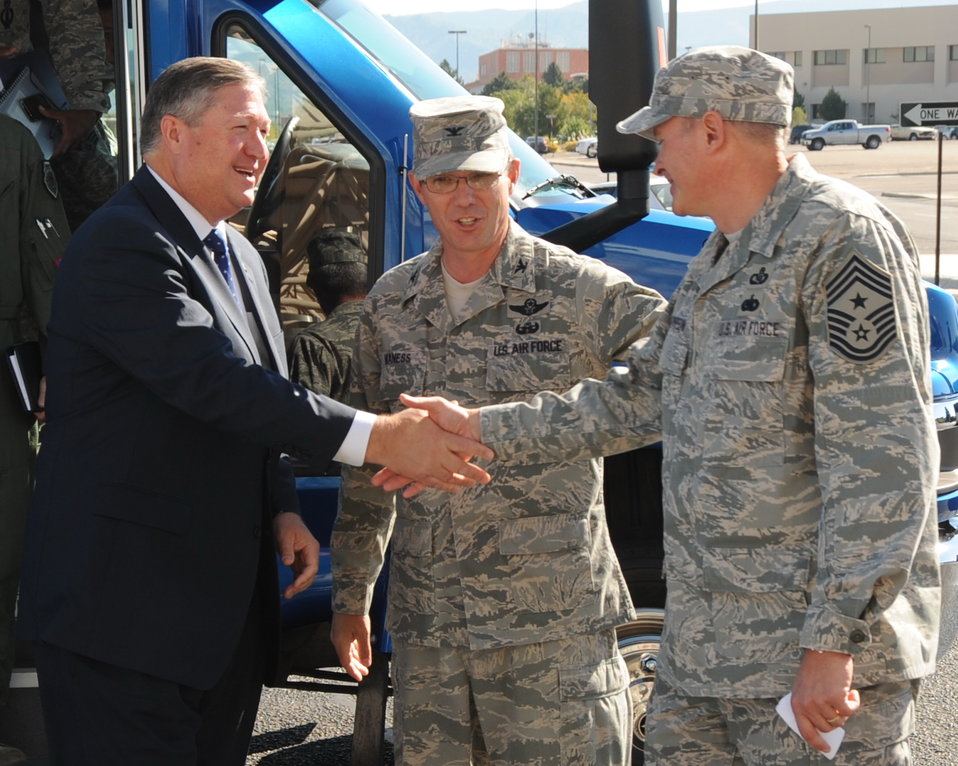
SECAF visits Kirtland Air Force Base, N.M.

Secretary of the Air Force Michael Donley is greeted by Col. Robert Maness, the 377th Air Base Wing commander, and Chief Master Sgt. Lee Thompson, the 377th ABW command chief, Oct. 14, 2010, as he arrives for an “All Call” at the Kirtland Air Force Base, N.M., base theater.